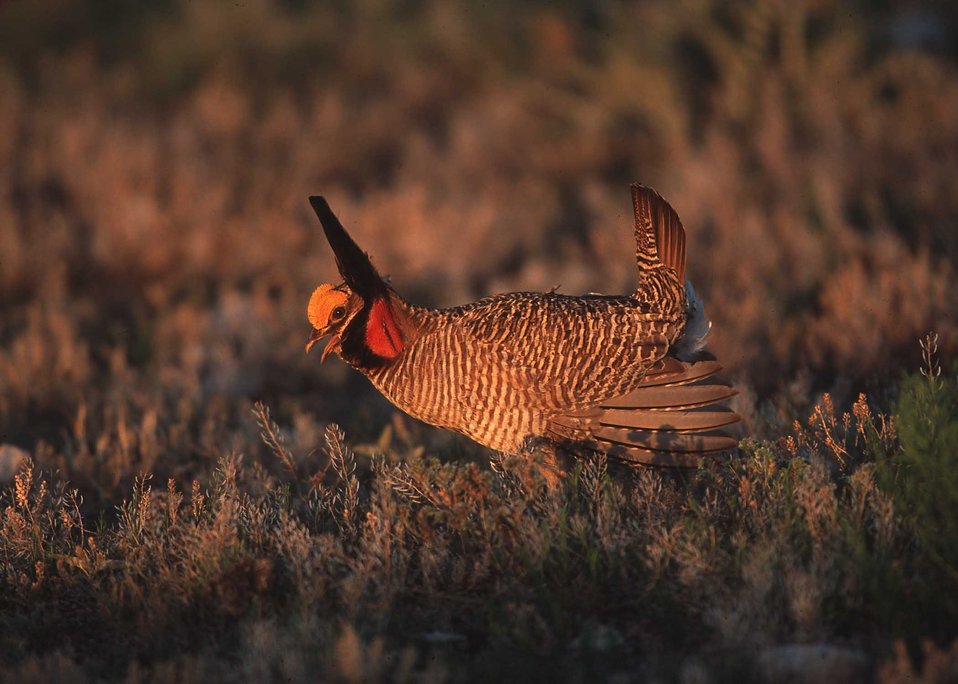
Lesser prairie chicken in Eastern New Mexico.